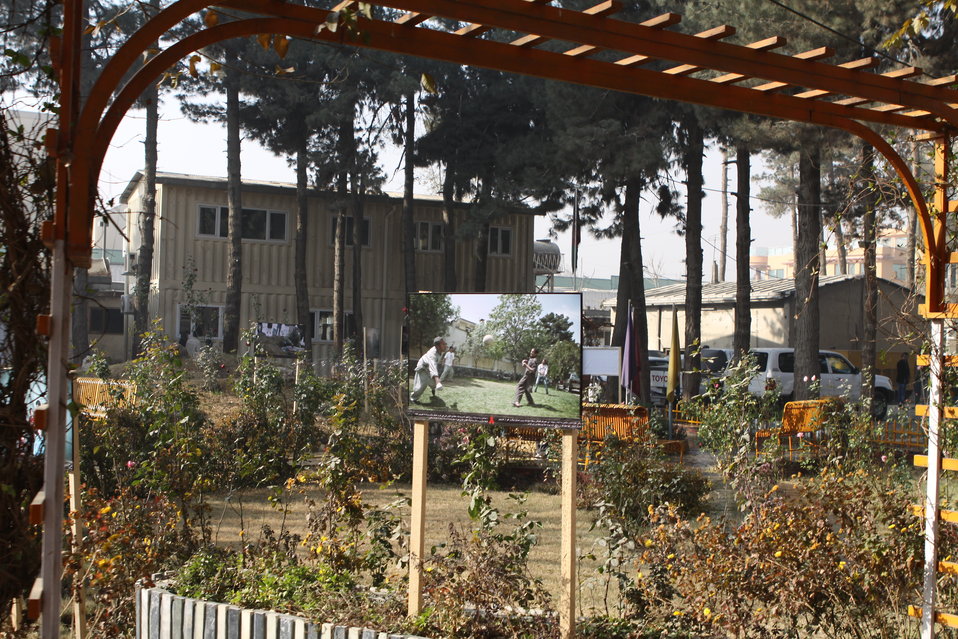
Community Health Workers Celebrated

Kabul, Afghanistan | December 5, 2010 — In support of the United Nations designated International Volunteer Day for Economic and Social Development, Afghanistan’s Ministry of Public Health celebrated its annual Community Health Worker Day today. Acting Minister of Public Health Dr. Suraya Dalil, USAID Senior Deputy Mission Director Robert Hellyer, other government officials, and international donors joined in recognizing the critical contribution of community health workers in Afghanistan and encouraging them to continue their voluntary support to their communities.
The event praised the contributions of the more than 22,000 volunteers throughout the country who deliver community level health-education, counseling, and services out of village health posts located in private homes. The Ministry of Public Health envisioned that community-based healthcare programs will actively encourage communities and families to adopt healthy lifestyles and behaviors, and provide families access to high quality and socially acceptable preventative medicine and life-saving services.
“We have 22,000 community health workers in Afghanistan that are able to implement the basic and standard medicines. They all have been trained through a job description,” said Minister Dalil. Addressing the health workers, she added, “I am proud and feel powerful that I have people like you.”
USAID-funded health projects collaborate closely with the Ministry of Public Health to improve the health and nutritional status of Afghans, provide quality primary healthcare, and promote healthy behaviors at the community and household-levels. USAID supported the training of more than 9,000 of the volunteer community health workers currently working in Afghanistan.
“On behalf of the American people, I congratulate the Community Health Workers for their diligence to gain the skills and knowledge necessary to serve their communities in this important role,” said USAID Senior Deputy Mission Director Hellyer. “USAID strongly supports community based health care and believes that quality community-based health services are essential to reaching Afghanistan’s Millennium Development Goals.”
To support the Basic Package of Health Services, USAID assisted in developing the community health worker training manual, helped train community health worker supervisors and master-trainers, facilitated in-service training, and produced and developed reporting tools, job aids, and education materials.